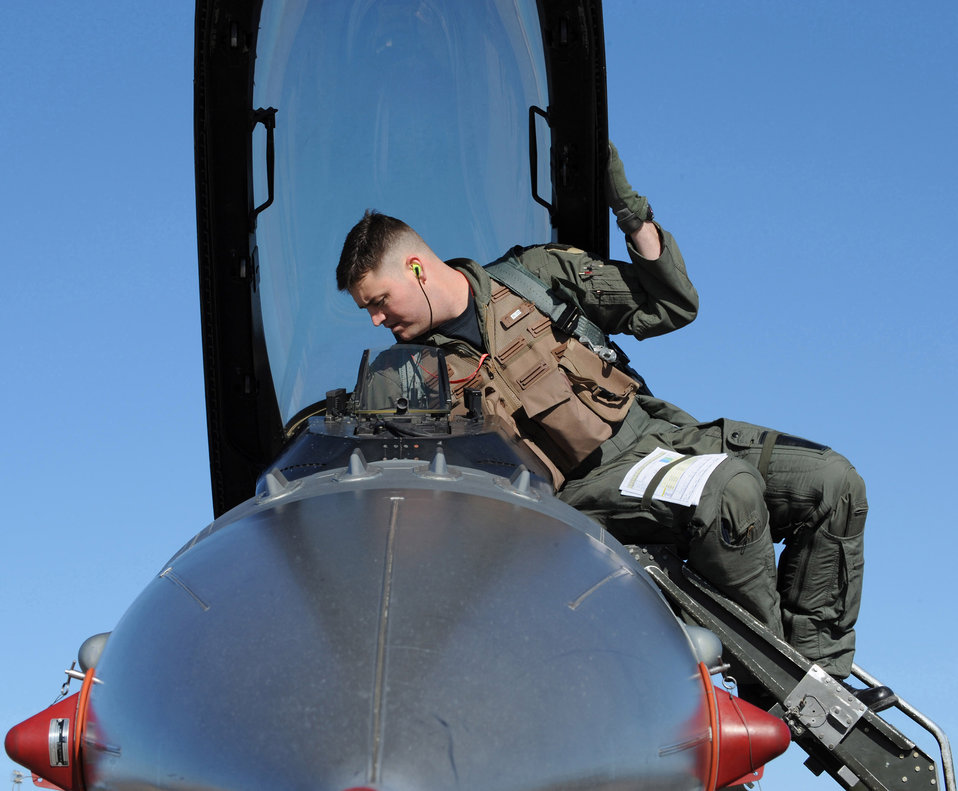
Checking it out

Capt. Joseph White prepares his F-16CJ Fighting Falcon for flight Jan. 29 at the U.S. Air Force Weapons School at Nellis Air Force Base, Nev. The school provides advanced training in weapons and tactics. Captain White is assigned to Spangdahlem Air Base, Germany.